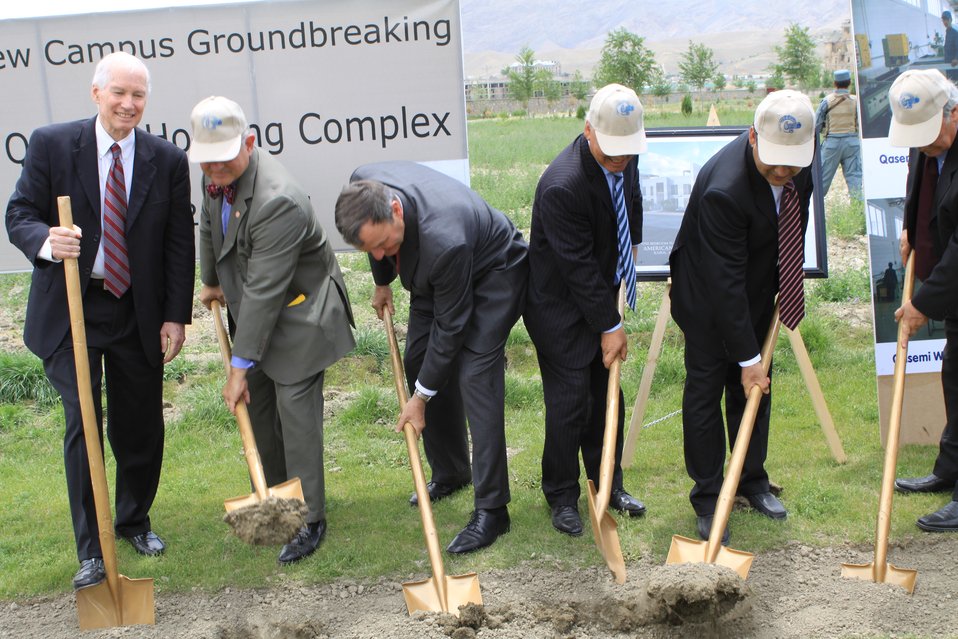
100526 AUAF Graduation 414